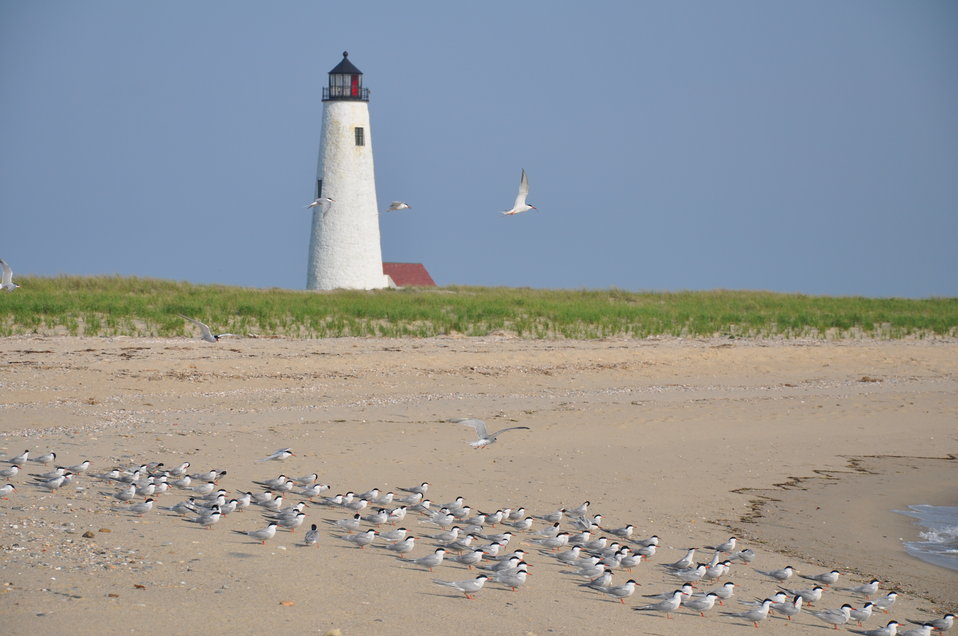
Nantucket National Wildlife Refuge.

Lighthouse at Nantucket National Wildlife Refuge.